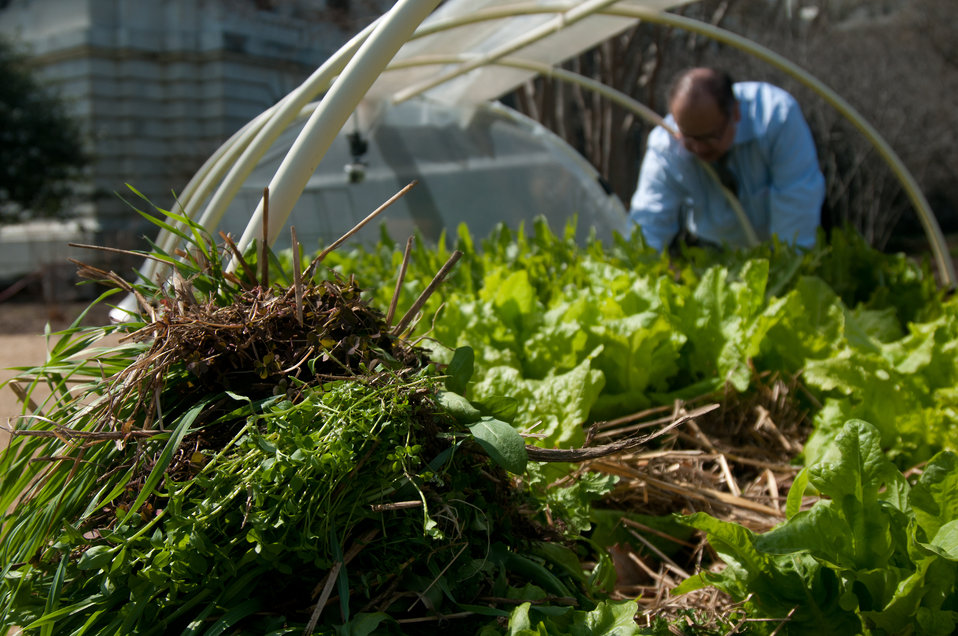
U.S. Department of Agriculture (USDA) Operations Program Specialist Richard Fierroz pulled weeds from i the lettuce growing in The People's Garden in Washington DC, on Thursday, March 17, 2011. Harvesting the largest leafs, allows the plant to continue to grow and can be harvested once a week.